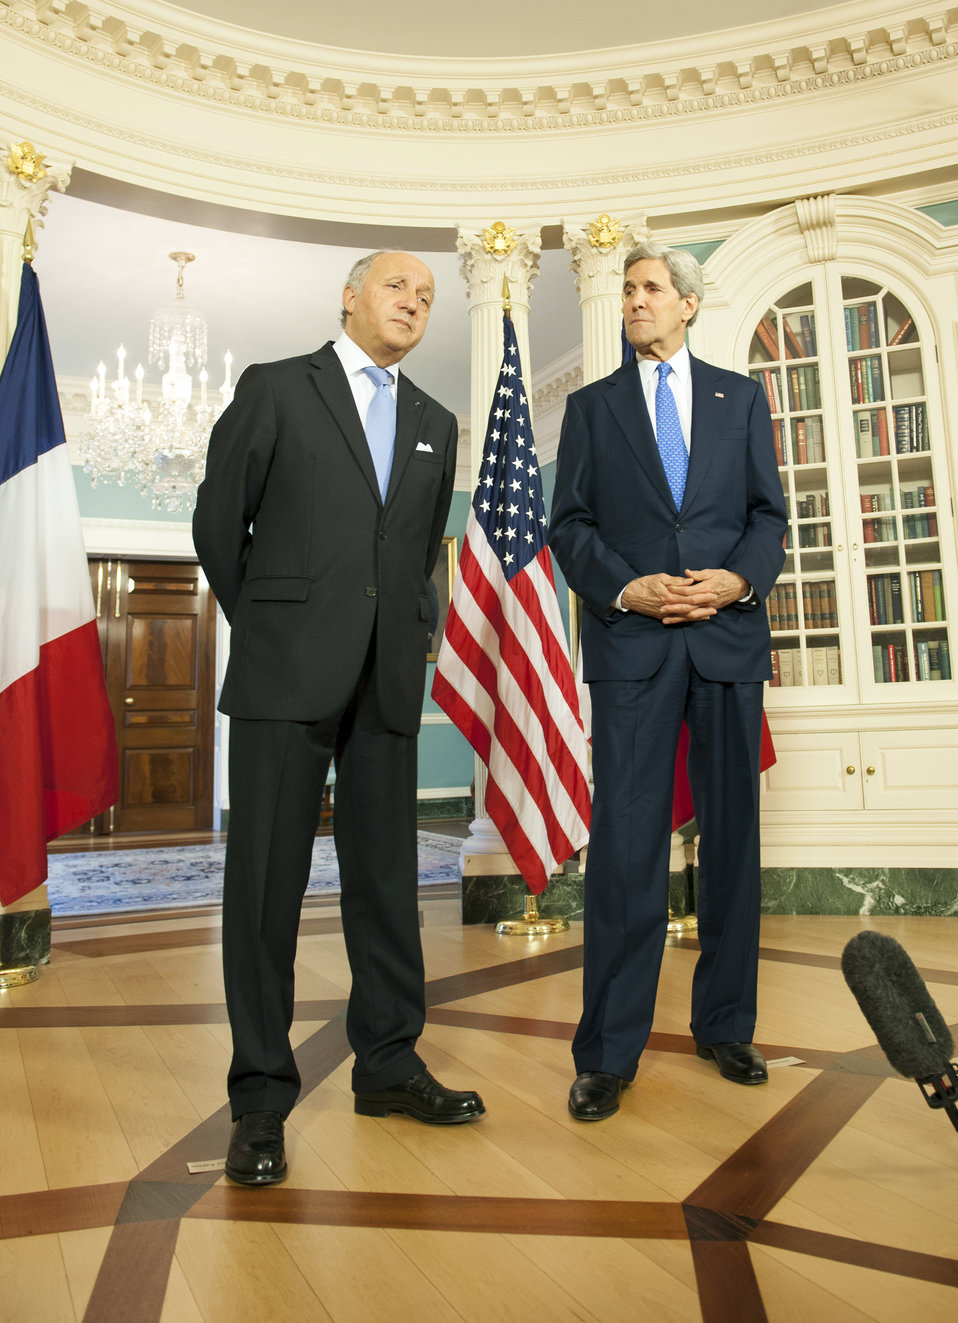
Secretary Kerry and French Foreign Minister Fabius Address Reporters

U.S. Secretary of State John Kerry and French Foreign Minister Laurent Fabius address reporters at the U.S. Department of State in Washington, D.C., on May 15, 2014.